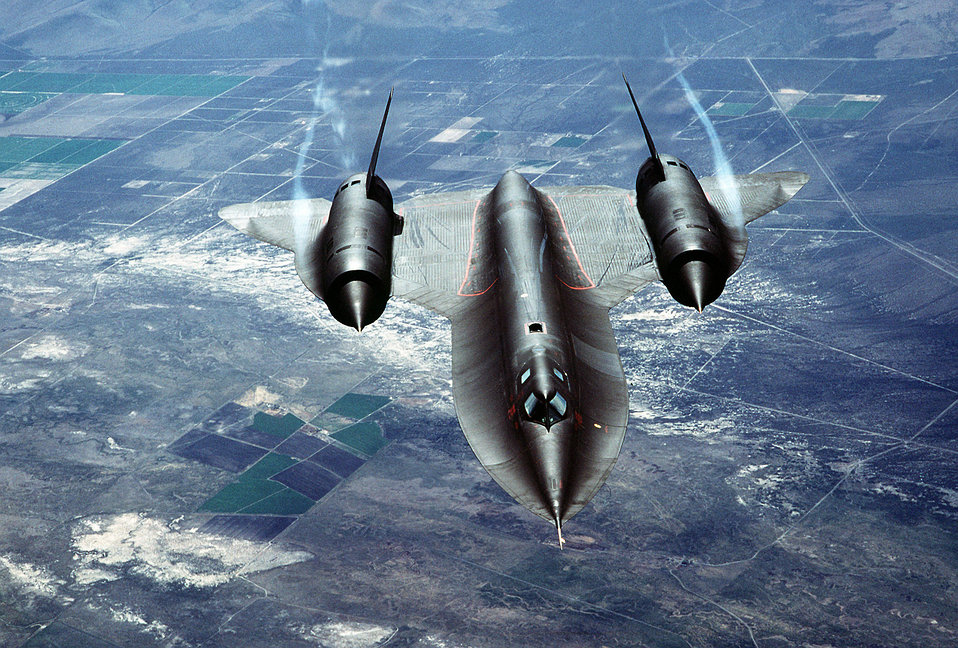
SR-71 Blackbird

SR-71, unofficially known as the